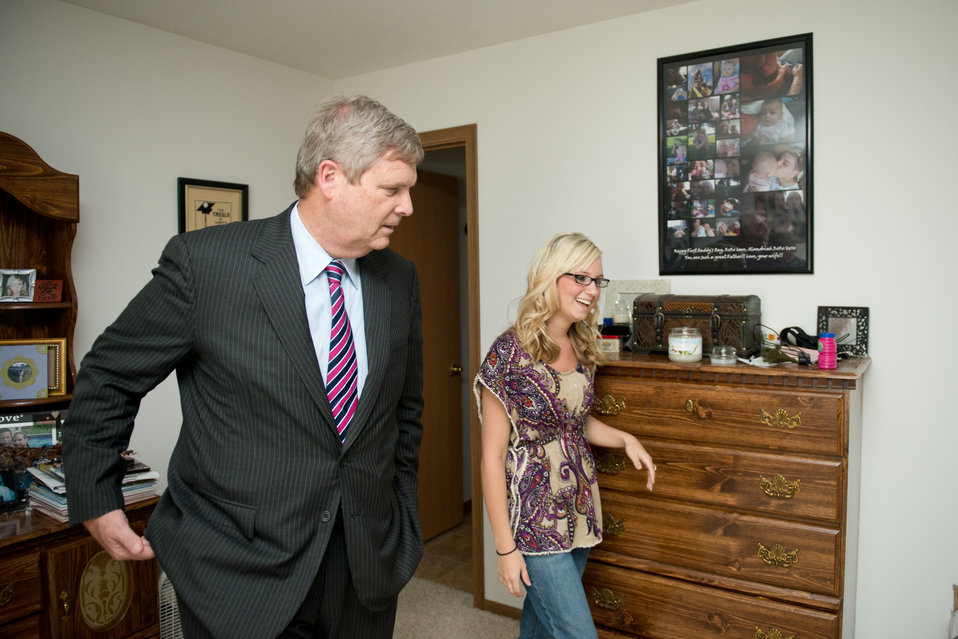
Agriculture Secretary Tom Vilsack looks around Arbor Village homeowner Jacquie Noel’s residence in Fayette County, OH on Thursday, June 28, 2012. Secretary Vilsack was on hand to commemorate National Homeownership Month in the community, comprised almost wholly of homes built with some degree of assistance from the U.S. Department of Agriculture’s (USDA) Rural Development (RD) housing programs.